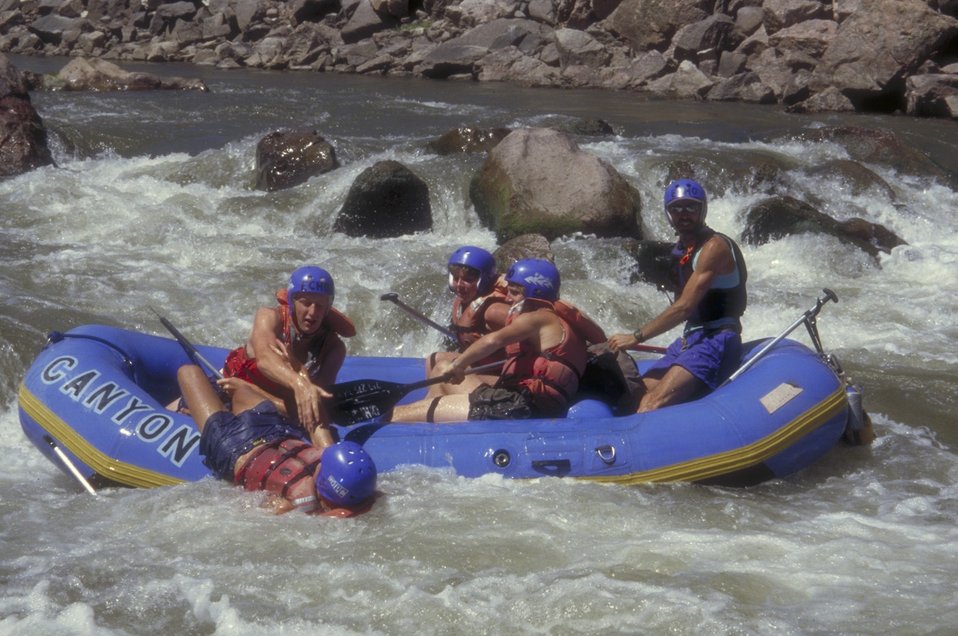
Rafting the Arkansas River